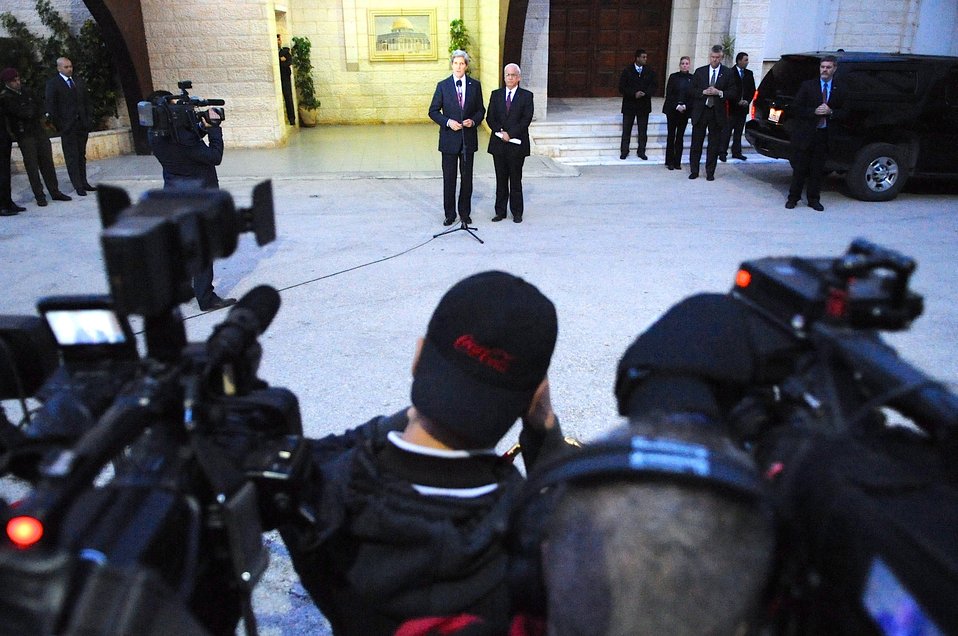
Secretary Kerry, Palestinian Negotiator Erekat Address Reporters in West Bank

U.S. Secretary of State John Kerry, flanked by Palestinian Authority Lead Negotiator Saeb Erekat, addresses reporters following a meeting focused on Middle East peace at the Muqata'a Presidential Compound in Ramallah, West Bank, on January 4, 2013.